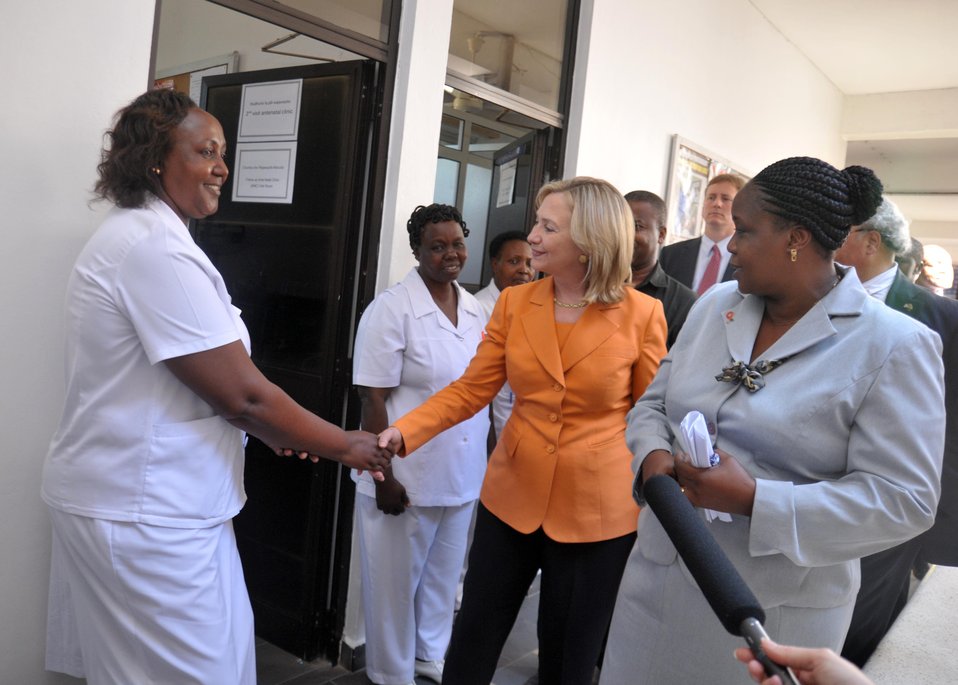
Secretary Clinton Shakes Hands With a Health Worker

U.S. Secretary of State Hillary Rodham Clinton, with Dr. Mwajuma Mbaga, shakes hands with a health worker at the Buguruni Health Center in Dar es Salaam, Tanzania, on June 12, 2011.